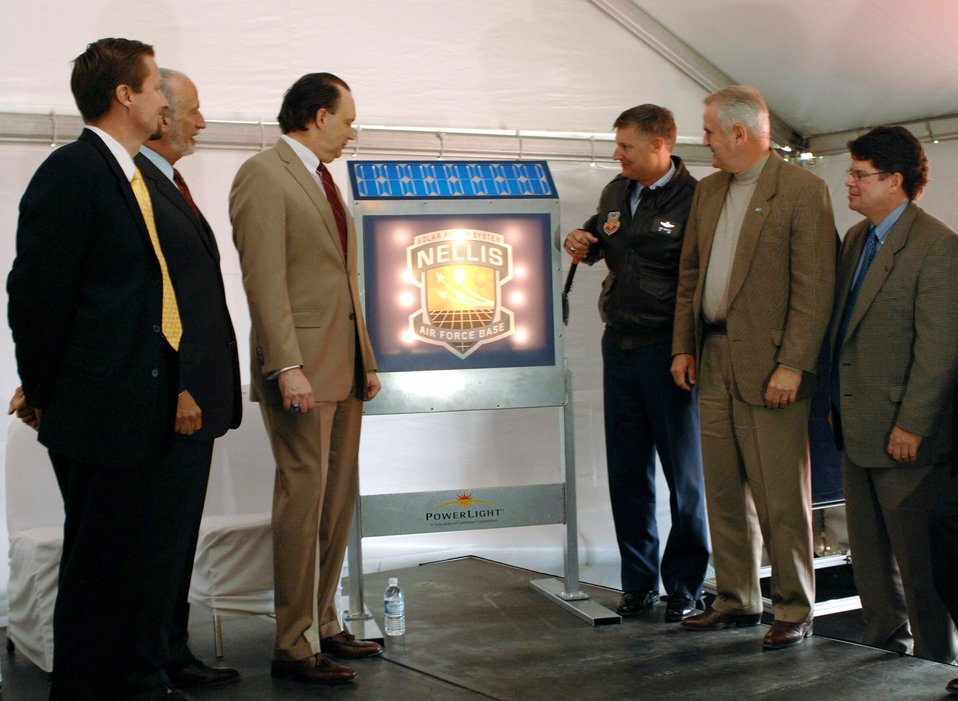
Solar power ground breaking ceremony

Officials from the Air Force, industry and the state of Nevada attended a groundbreaking ceremony at Nellis Air Force Base, Nev., April 23 to mark the start of construction of what will be the largest solar photovoltaic power system in North America. The power plant, scheduled for completion in early 2008 will produce approximately 15 megawatts of power and provide more than 25 percent of the electricity demand on the base. Among those attending the ceremony were (from left) Tom Werner, SunPower Corporation chief executive officer; Pat Shalmy, Nevada Power Company president; William Anderson, assistant secretary of the Air Force for installations, environment and logistics; Col. Michael Bartley, 99th Air Base Wing commander; Jim Gibbons, governor of Nevada; and Matt Cheney, MMA Renewable Ventures CEO.